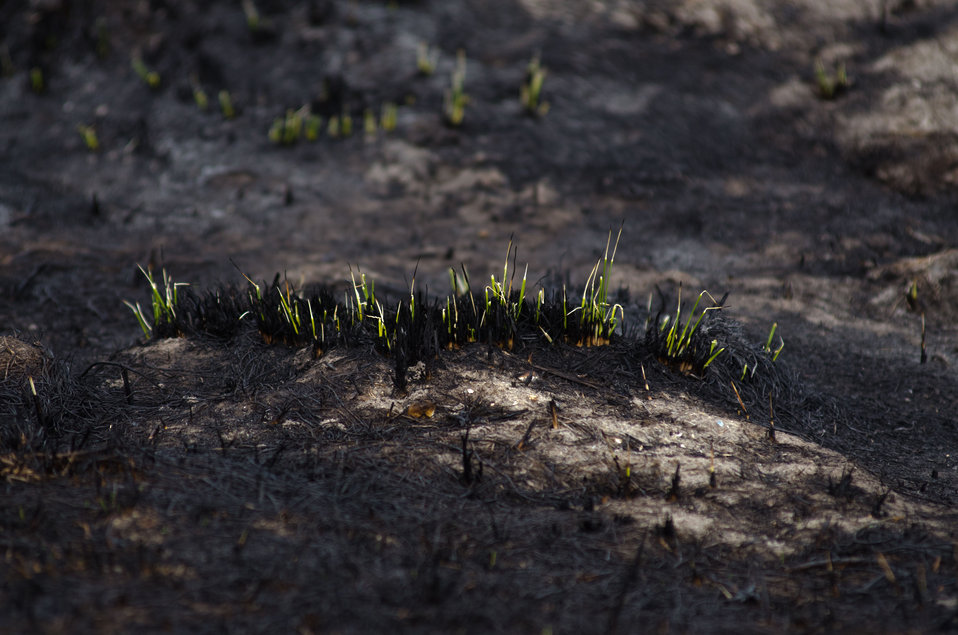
One week ago Aransas National Wildlife Refuge, in Austwell, TX, on Friday, December 16, 2011 used prescribed burns on this portion of the refuge. Typical of a coastal prairie shoreline, natural occurrences of fire are part of a healthy ecosystem. Phragmites reed grass and other plant roots stabilize the ground and were unharmed by the fire. Healthy growth is already seen from the charred grass and ashes on the ground. A refuge road also serves as an effective firebreak.
State Conservationist Salvador Salinas commented on the USDA-NRCS Gulf of Mexico Initiative (GoMI) during a press conference, about improving water quality, habitat, and the health of the Gulf ecosystem. “Launching this initiative is a top priority for NRCS in Texas because the Gulf of Mexico is one of our state’s premier natural resources. It provides vital habitat for wildlife, and creates jobs in industries that depend upon them. The health of this resource is essential to Texas as well as to the nation,” said Salvador Salinas. The Texas initiative focuses on three watersheds in Refugio, Calhoun, Victoria and Aransas counties and ultimately the Gulf of Mexico.
“What is really compelling about GoMI and other similar conservation efforts is that they prove that Texas farmers and ranchers not only feed and clothe us and power our vehicles, but they can also help protect and restore our rivers and provide more habitat for wildlife,” stated Salinas. “That’s why it is important that this conservation project is not about taking productive farm land out of production. This is a working lands initiative, so that not only are we helping to restore the health of the Gulf, but we’re also helping to sustain and enhance the productivity of the Gulf’s farms and ranches.”
Nationally, USDA-NRCS is dedicating up to $50 million over three years to this effort.
NRCS will continue to provide proven technical expertise and that of their partners. The anticipated result is improved water quality, stream flows and wildlife habitat.